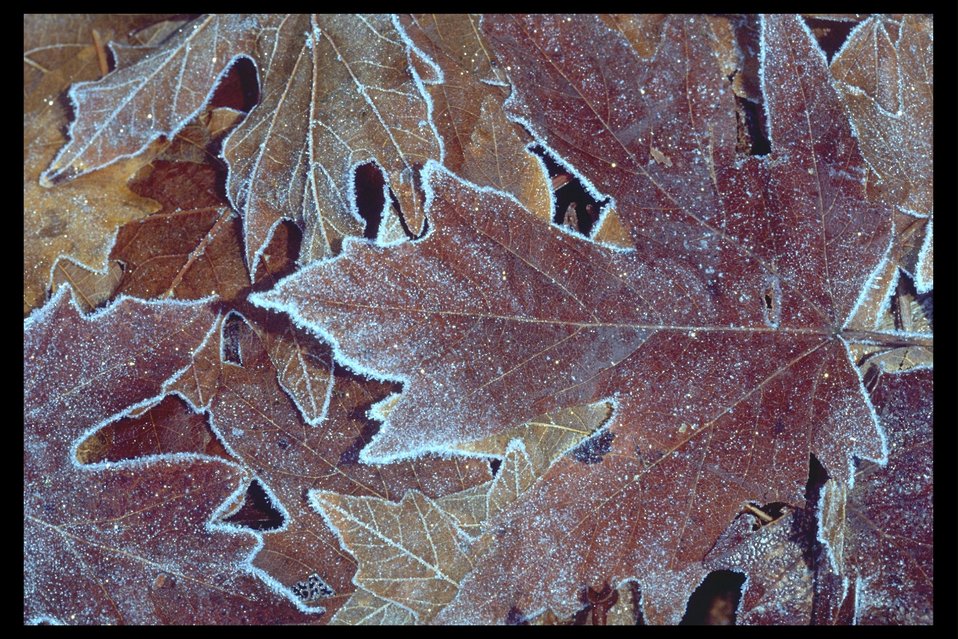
Frosted leaves (big leaf maple) along West Forks Evans Creek.